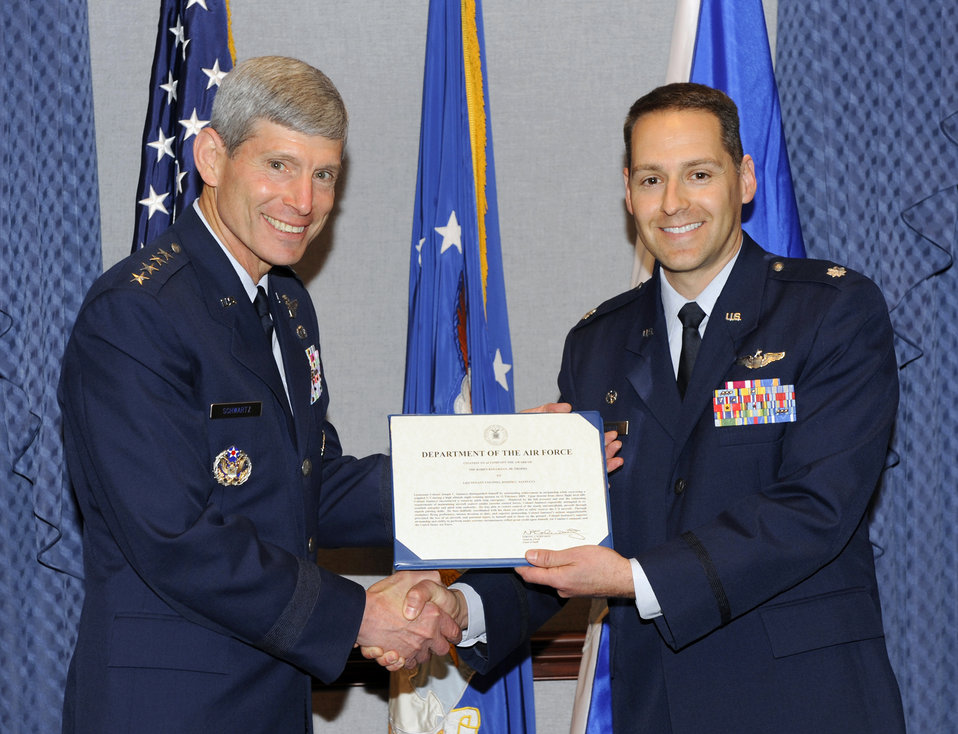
Air Force U-2 pilot receives top safety award

Air Force Chief of Staff Gen. Norton Schwartz shakes hands with Lt. Col. Joseph Santucci, a Koren Kolligian Jr. trophy recipient, during a ceremony June 1, 2010, at the Pentagon. Colonel Santucci is the 99th Reconnaissance Squadron commander from Beale Air Force Base, Calif.